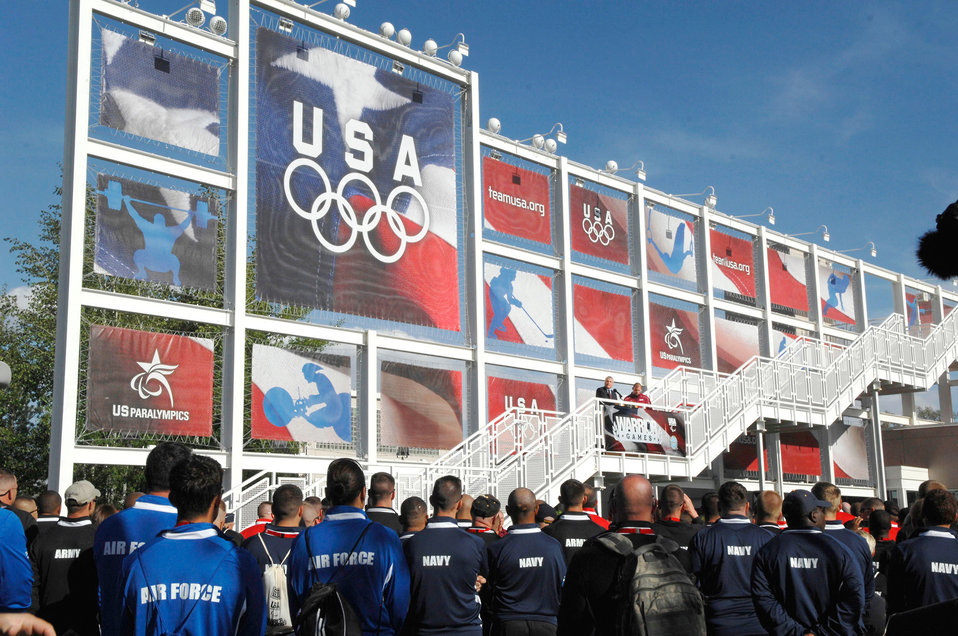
Disabled vets, troops compete in first Warrior Games

Approximately 200 disabled veterans look on as Colorado Gov. Bill Ritter speaks during the opening ceremony of the inaugural Warrior Games May 10, 2010, at the U.S. Olympic Training Center in Colorado Springs, Colo. The Warrior Game athletes are competing in Paralympic-style events May 10 through 14.